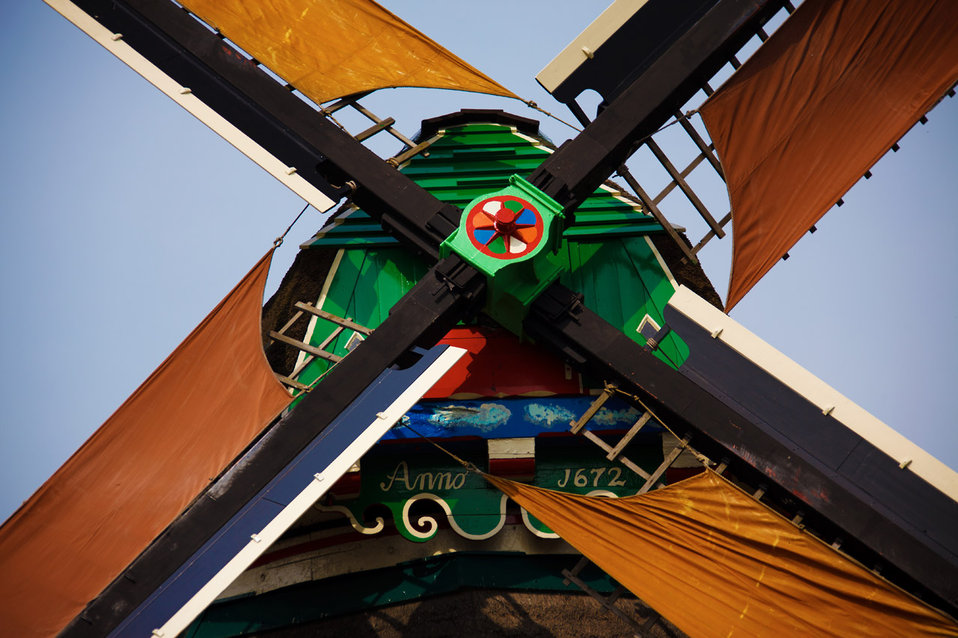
Windmill blades

Close up picture of blades on an old traditional windmill.